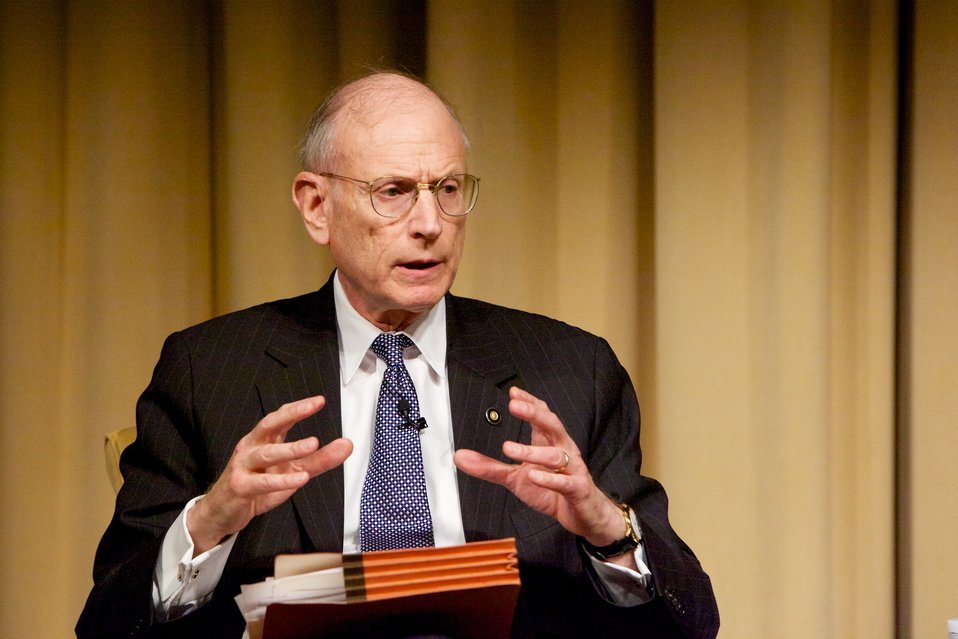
The Monuments Men; Ambassador Stuart E. Eizenstat, former Special Representative of the President and Secretary of State on Holocaust-Era Issues